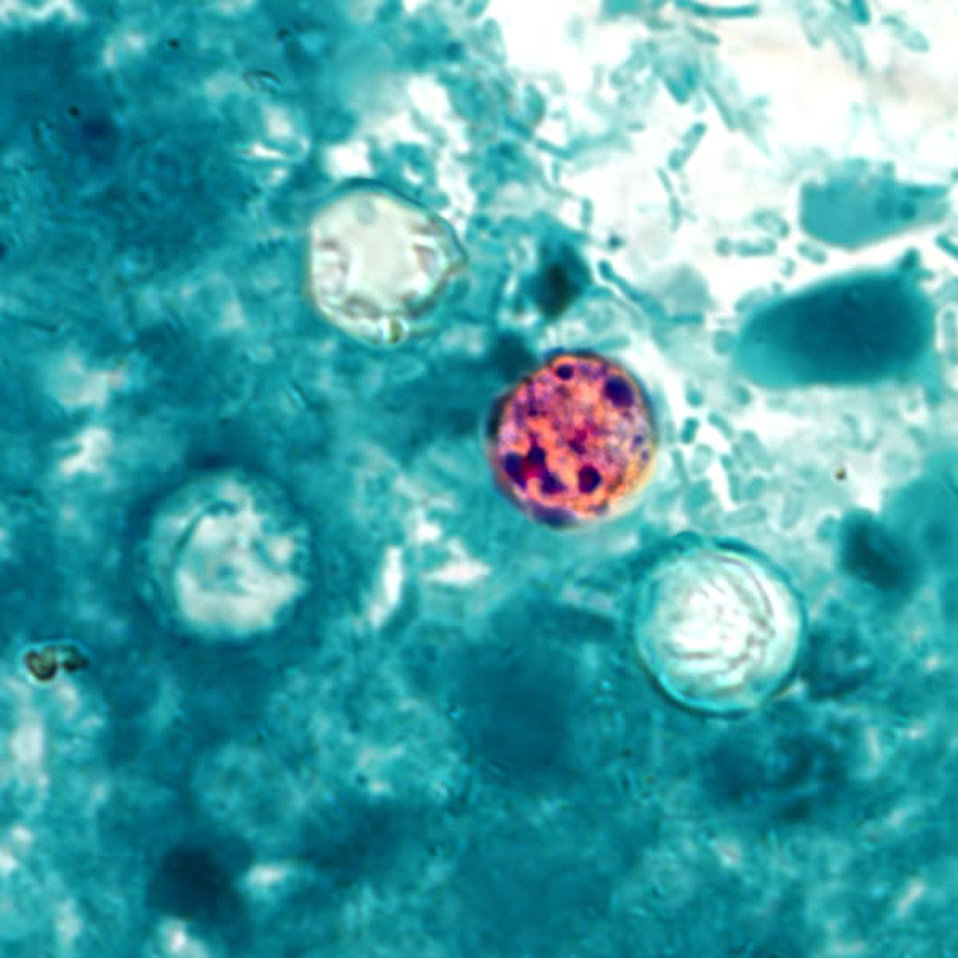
This photomicrograph of a fresh stool sample, which had been prepared using a 10% formalin solution, and stained with modified acid-fast stain, revealed the presence of four Cyclospora cayetanensis oocysts in the field of view. Compared to wet mount preparations, the oocysts are less perfectly round and have a wrinkled appearance due to this method of fixation. Most importantly, the staining is variable among the four oocysts.